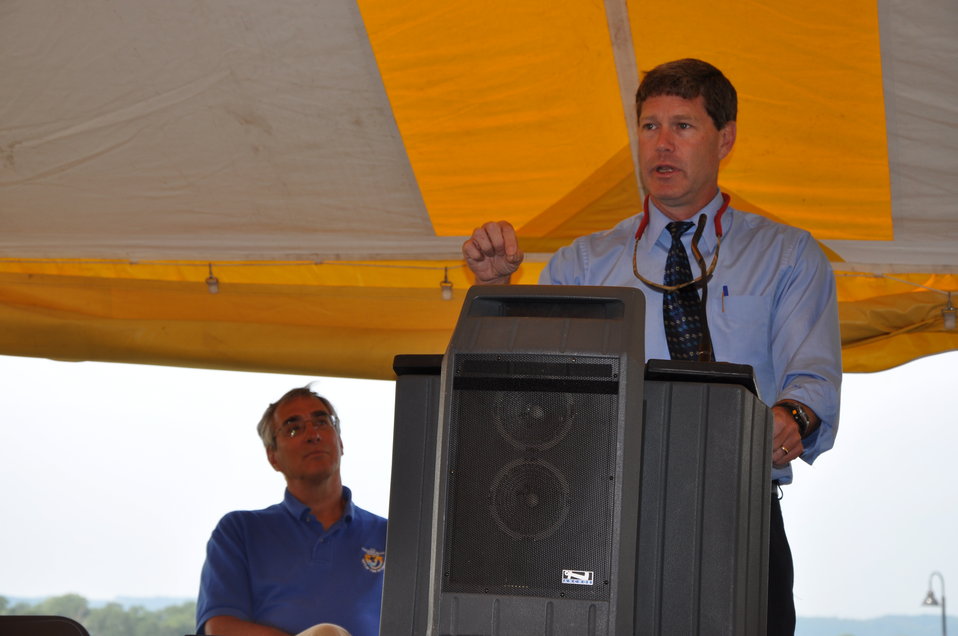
Congressman Ron Kind addresses the crowd at the grand opening ceremony while U.S. Fish and Wildlife Service Midwest Regional Director, Tom Melius, looks on.